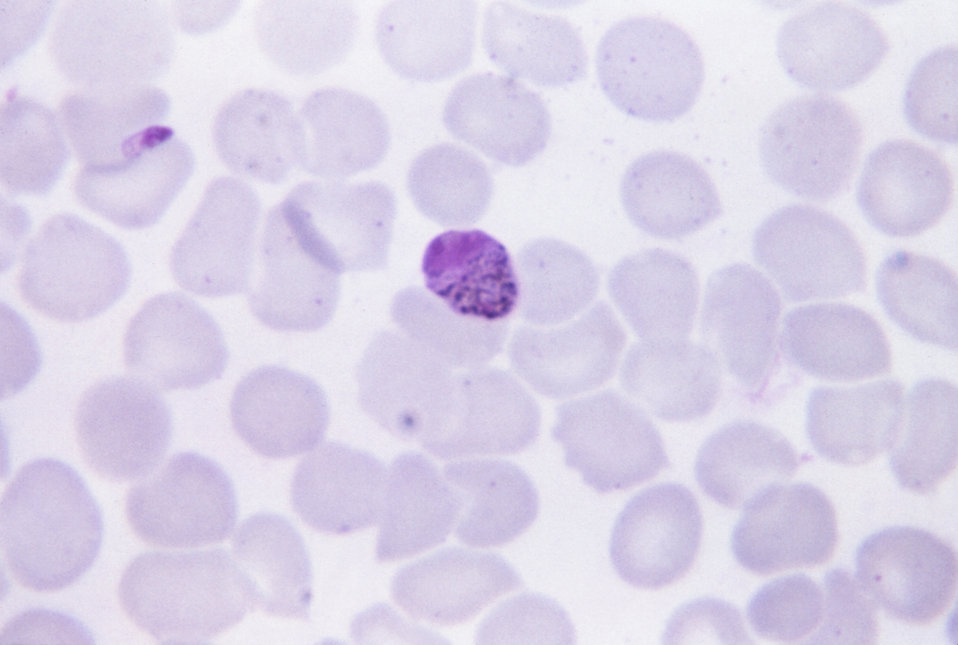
This thin film Giemsa stained micrograph depicts a Plasmodium malariae microgametocyte.